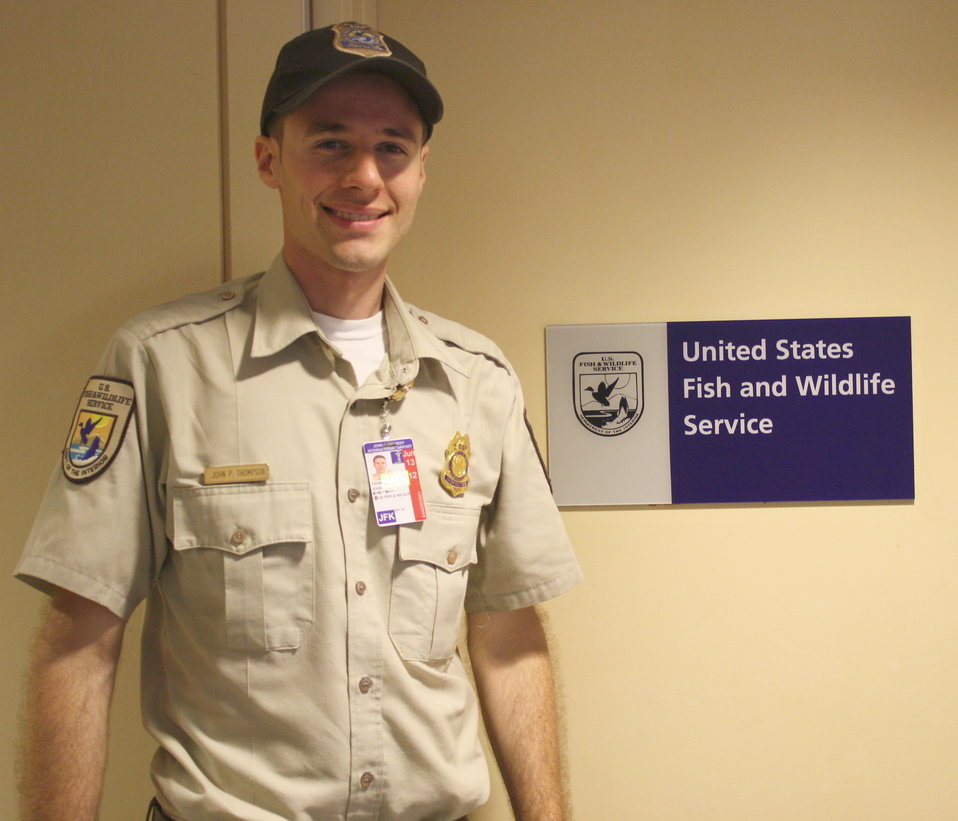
Inspector at JFK International Airport

Inspectors from the Valley Stream, N.Y. Office of Law Enforcement oversee wildlife imports and exports for the Port of New York, including JFK International Airport.